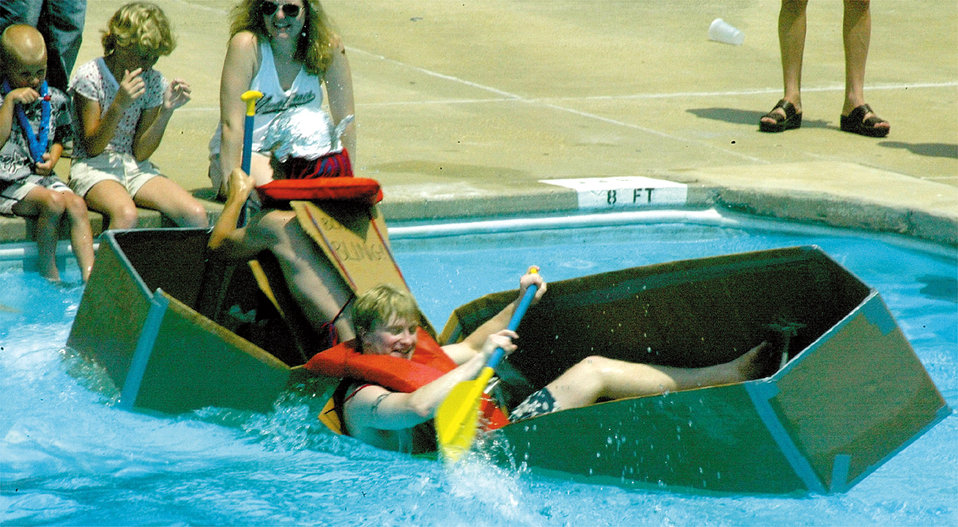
Sink or swim

POPE AIR FORCE BASE, N.C. -- Second Lt. Scot Price and Aaron Giachetti struggle to finish a race in their doomed cardboard vessel. The 43rd Contracting Squadron team completed the race in 45.25 seconds. The 743rd Aircraft Maintenance Squadron Airmen out-paddled 13 other teams to win with a time of 24 seconds, a course record.